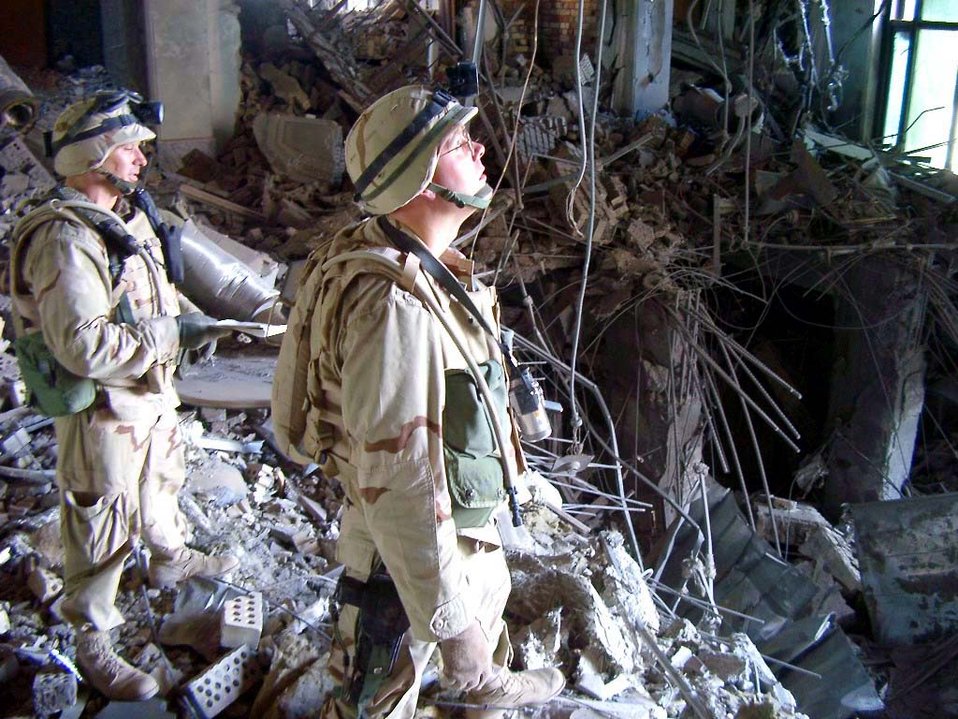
Shock and awe assessment

BAGHDAD, Iraq -- Maj. Craig Baker (left) and Capt. Mitch Simmons assess the damage from a precision-guided munition at one of Saddam Hussein's presidential palaces. The airmen are among nearly 100 experts of the Combined Weapons Effectiveness Assessment Team. The team has visited more than 100 of a planned 500 sites to assess how well coalition weapons achieved their intended effects during Operation Iraqi Freedom. It will report its findings to U.S. Central Command this fall.